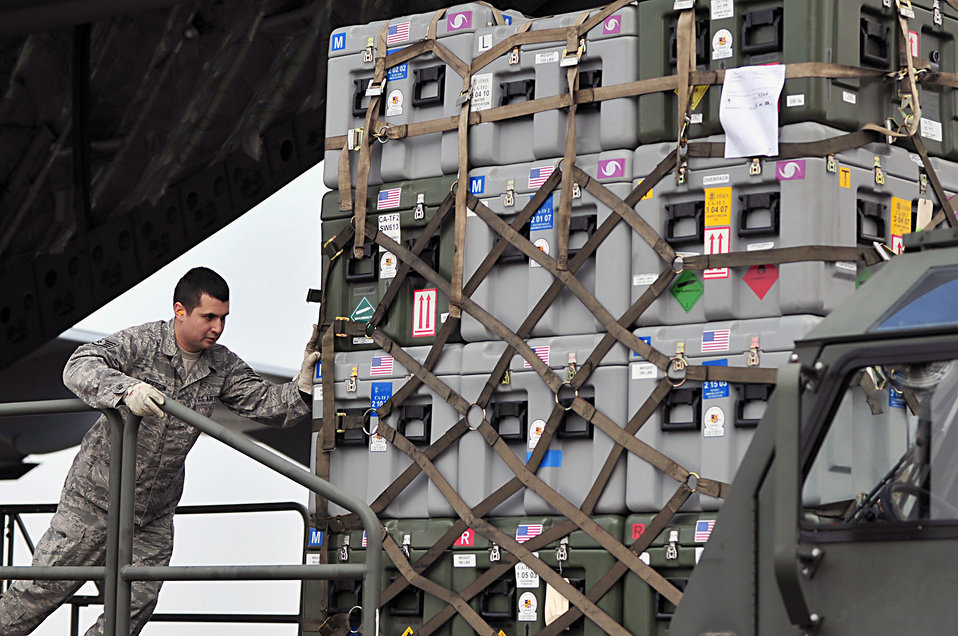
Humanitarian relief supplies

U.S. Air Force Staff Sgt. James Anderson off loads pallets of humanitarian relief supplies onto a 25K loader Mar. 13, 2011, Misawa Air Base, Japan. Search and rescue teams from Los Angeles County Fire Department came out in support of Operation Tomodachi after an 8.9 magnitude earthquake hit 100 miles off the coast of Northern Japan Mar. 11, 2011. Sergeant Anderson is assigned to the 35th Logistics Readiness Squadron.